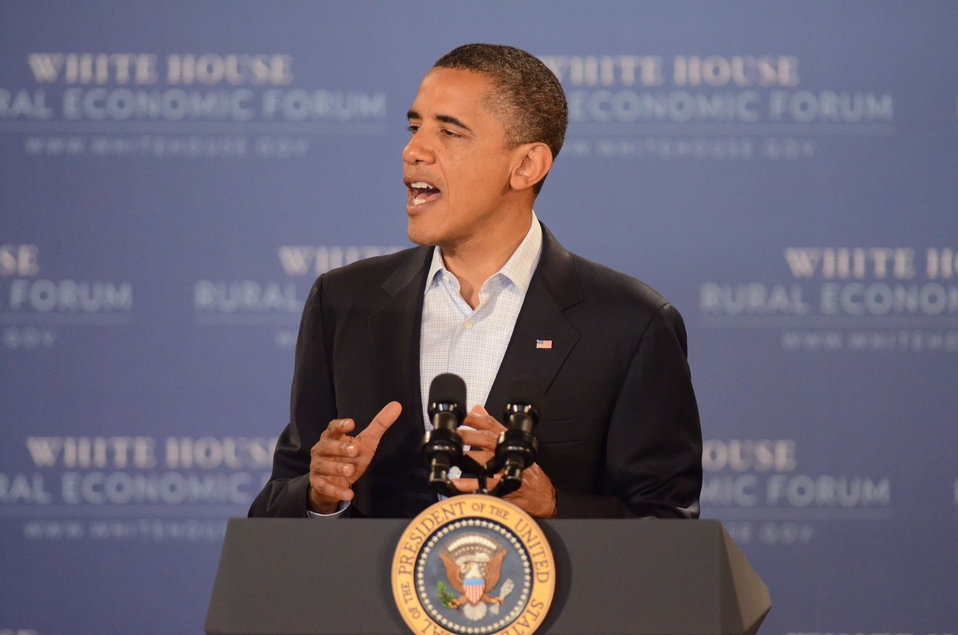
President Barack Obama speaking at the Northeast Iowa Community College, for a White House Rural Economic Forum on Tuesday, Aug. 16, 2011. The President’s visit will focus on agriculture’s contribution to the national economy, and how to create more jobs in rural America.